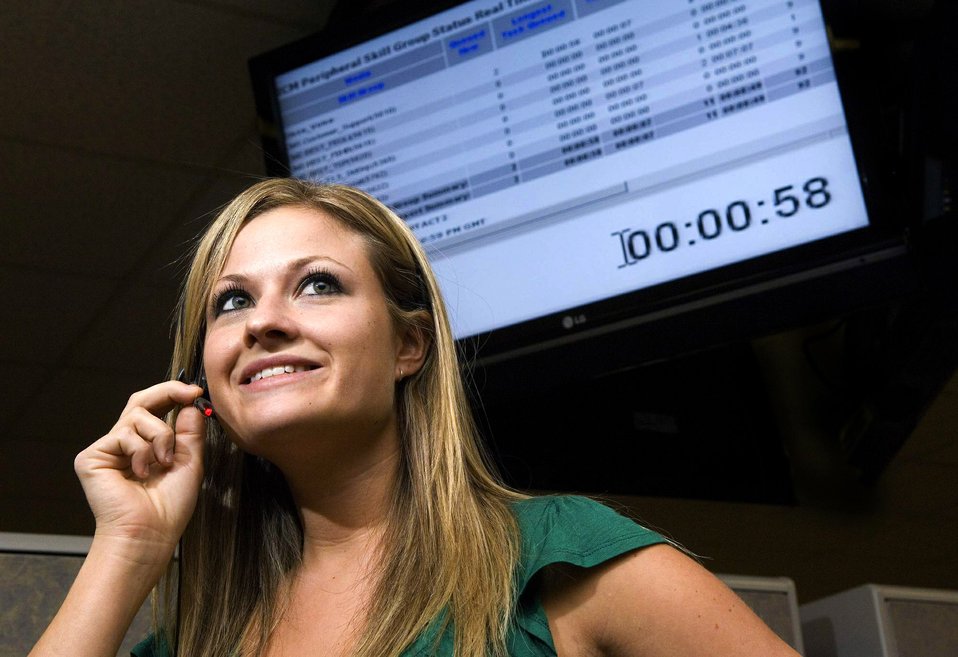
AFPC officials offer 24-hour customer service

Lauren Hutchings answers phone calls for the Air Force Personnel Center's civilian employment and benefits contact center Feb. 26 at Randolph Air Force Base, Texas. The Air Force Contact Center provides 24/7 customer service for all personnel needs. The center improves personnel services by developing programs that allow individuals to perform personnel actions, anytime, anywhere through Web-based, self-service applications. The 2,200 personnelists and functional representatives at AFPC ensure integration and execution of personnel operations to meet field commander's requirements, while improving the life of Airmen.